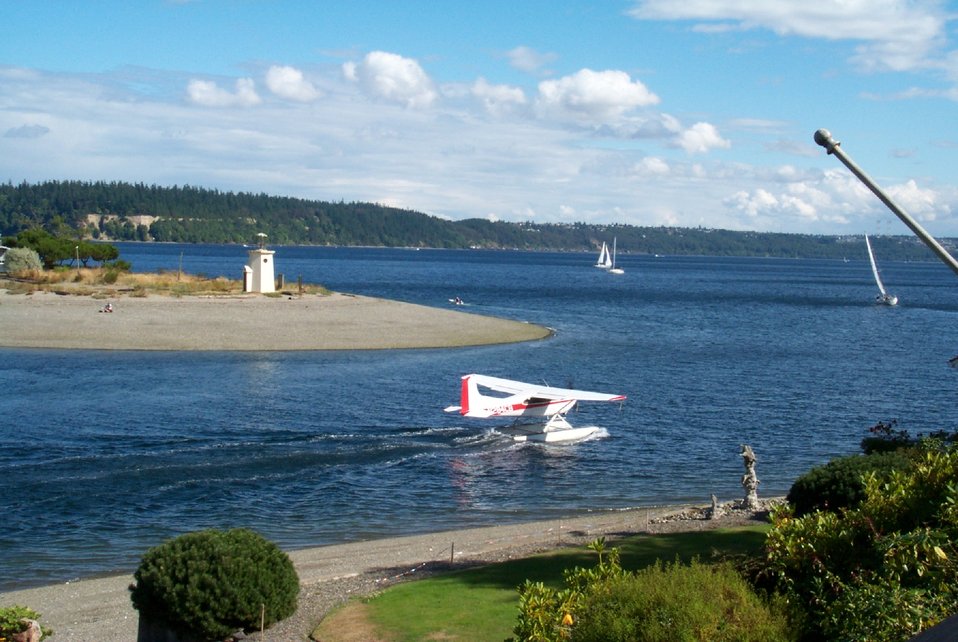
Seaplane departing Gig Harbor.